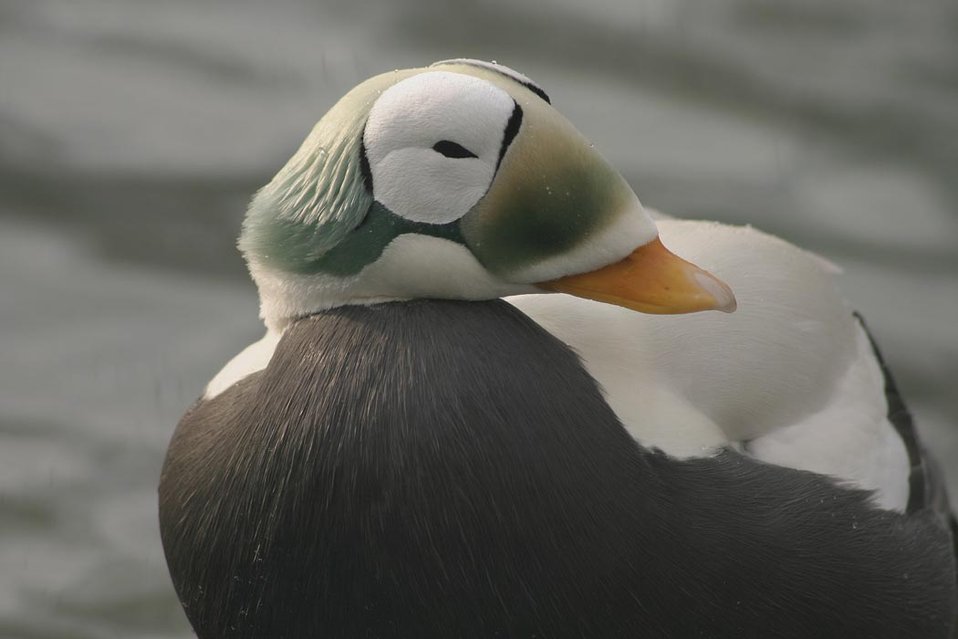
Threatened spectacled eider male (Somateria fischeri), Alaska SeaLife Center, Seward, Alaska